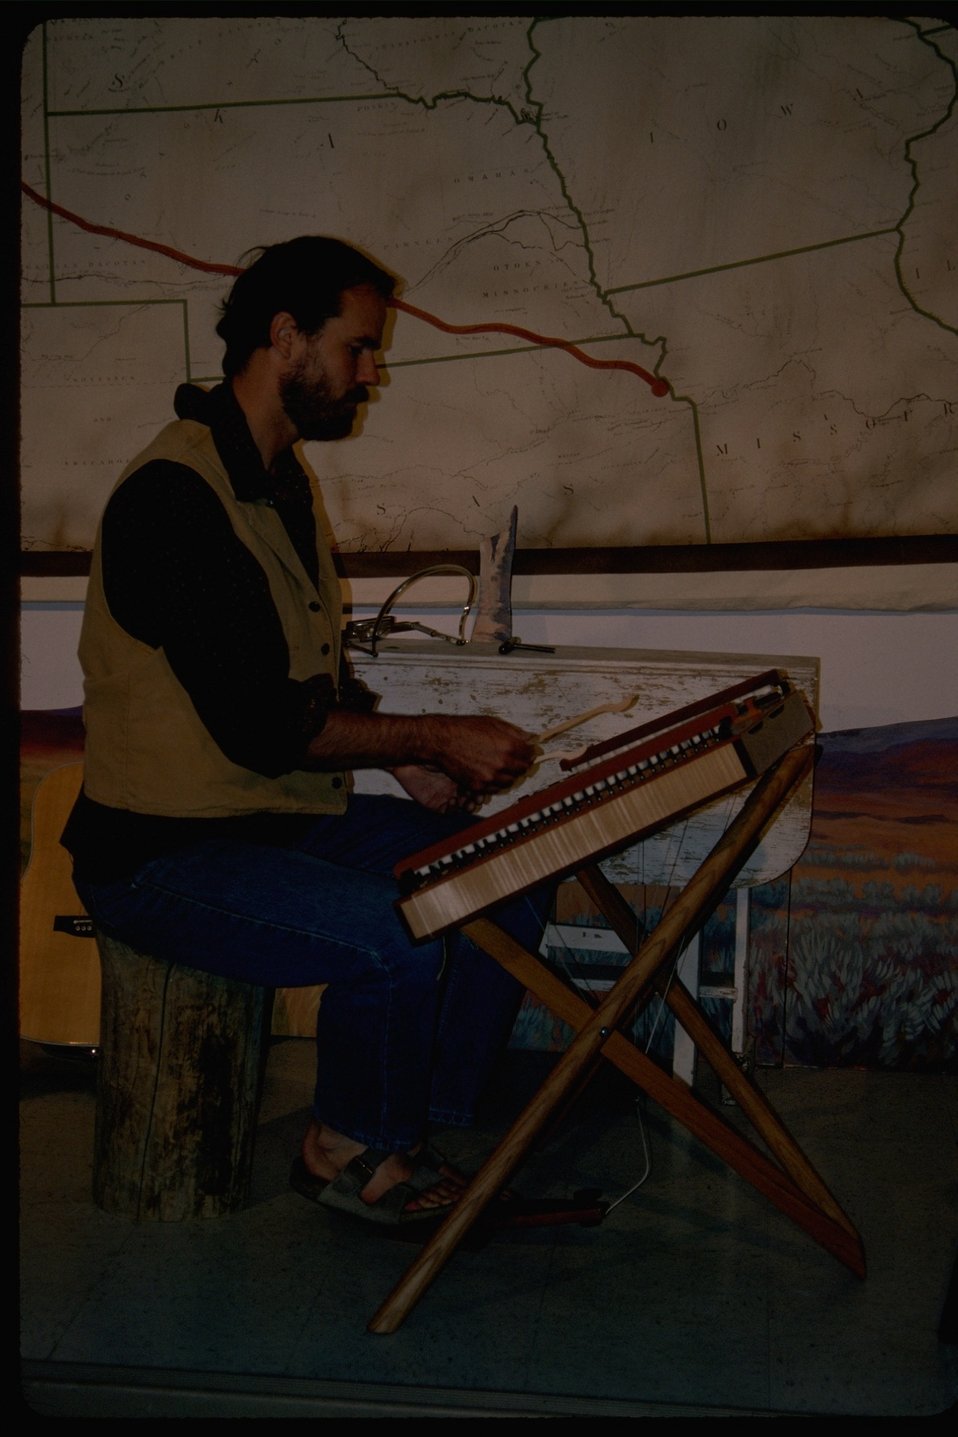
Theater performance --sagebrush reunion-- at the NHOTIC.